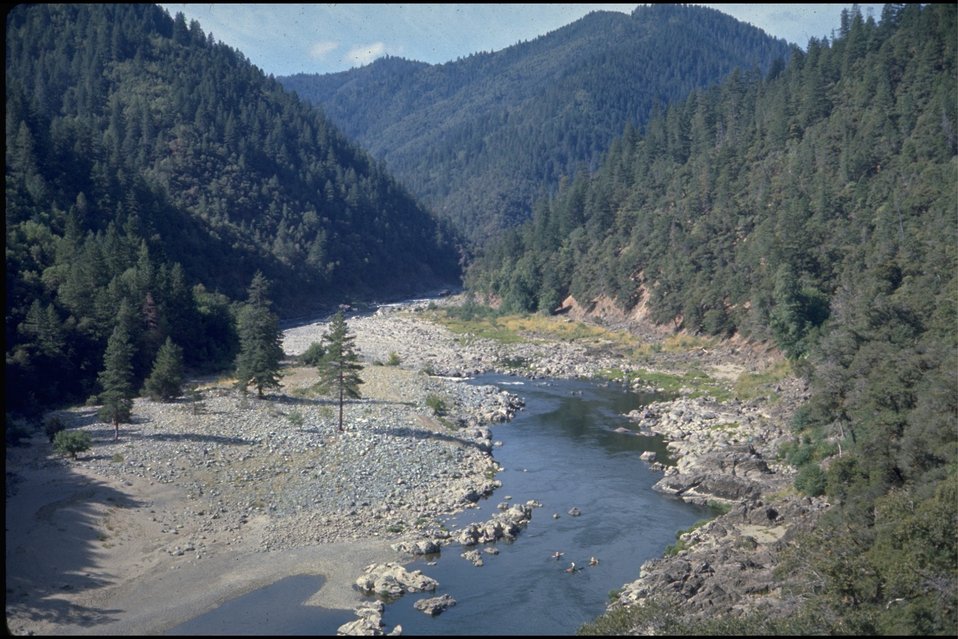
Wildcat Campsite on the Wild Section of the river.